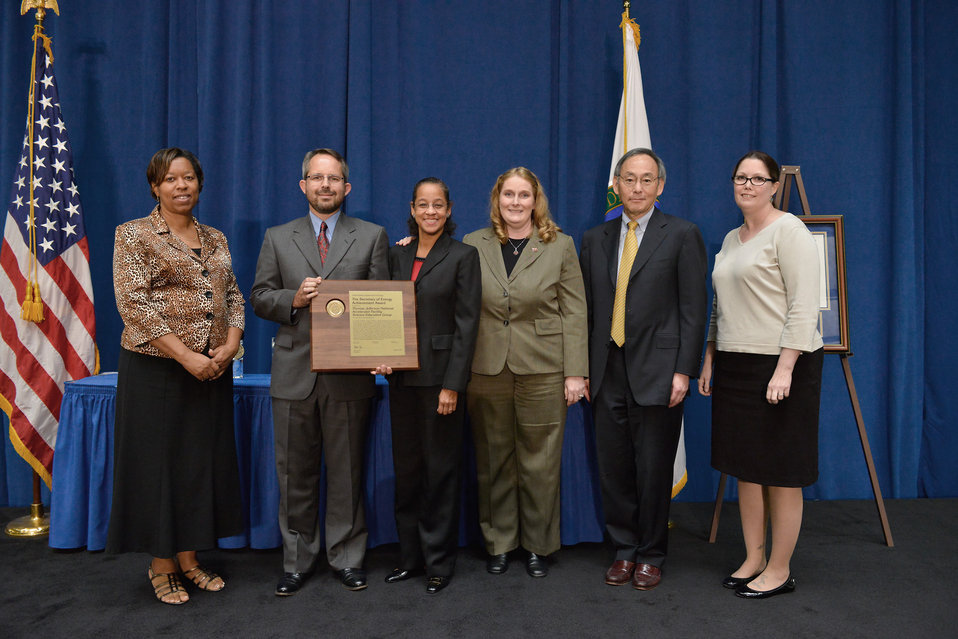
Thomas Jefferson

Awardees (not all pictured): Telesha Brown, Steve Gagnon, Brita Hampton, Lisa Surles-Law, Janet Tyler, Christine Wheeler. The Science Education group at Jefferson Lab has developed and implemented model programs that improve the quality of science education, reaching 12,000 students and 800 teachers per year. The group delivers the innovative Becoming Enthusiastic About Math and Science (BEAMS) program which is a model program reaching middle school students from under-performing schools and helps students obtain measurable improvements in math and science test scores. BEAMS has been recognized by the National Academy of Science RISE (Resources for Involving Scientists in Education) project as one of only thirteen K-12 science education programs where scientists, engineers and other community members have especially effective roles. The Lab group has worked to extend its reach to teachers by creating the JLab Science Activities for Teachers program, funded by Jefferson Science Associates. JLab Science Activities for Teachers is a tremendous outreach program and provides an additional 40 local middle school teachers with interactive activities to enhance physical science instruction at the middle school level as well as lectures by Jefferson Lab staff on the applications of science. The program is offered for the full 9-monthschool year and positively impacts an additional 4,000 students each and every year.